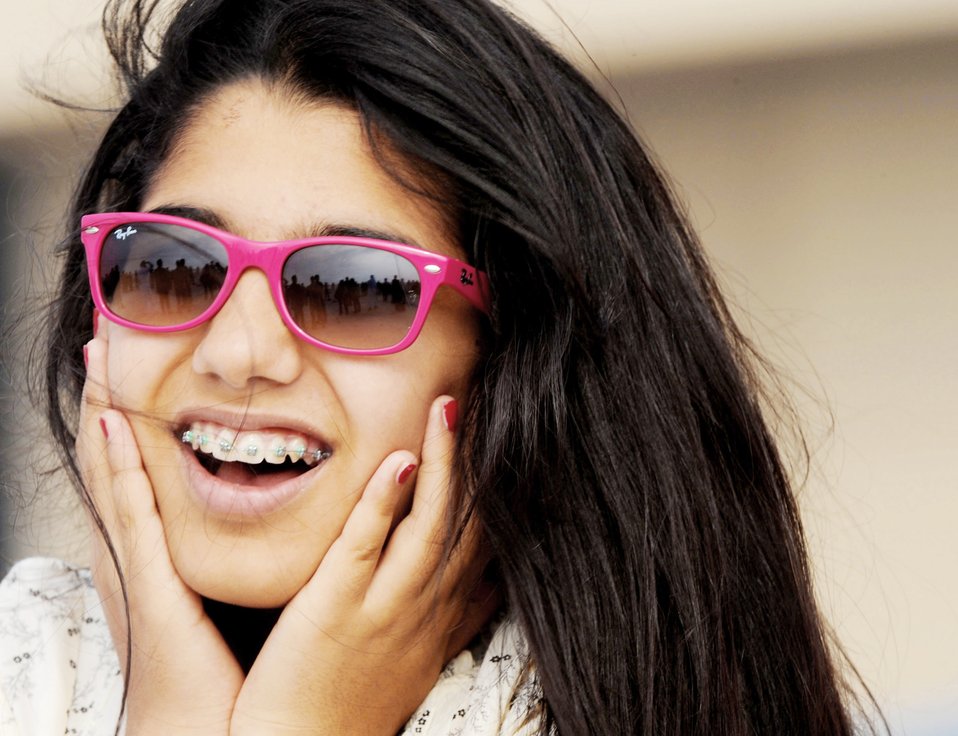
Airmen, Sailors demonstrate airpower at Bahrain International Airshow

A local Bahraini girl covers her ears while a Navy F-18 Super Hornet flies overhead during Bahrain's inaugural airshow Jan. 23, 2010.